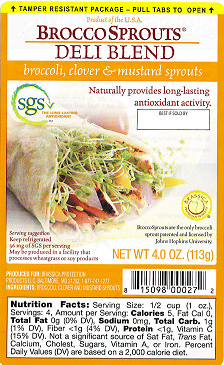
RECALLED - Sprouts

December 31, 2011 - RECALL Green Valley Food Corp. is Expanding Its Recall to Include Additional Products Because of a Possible Health Risk.